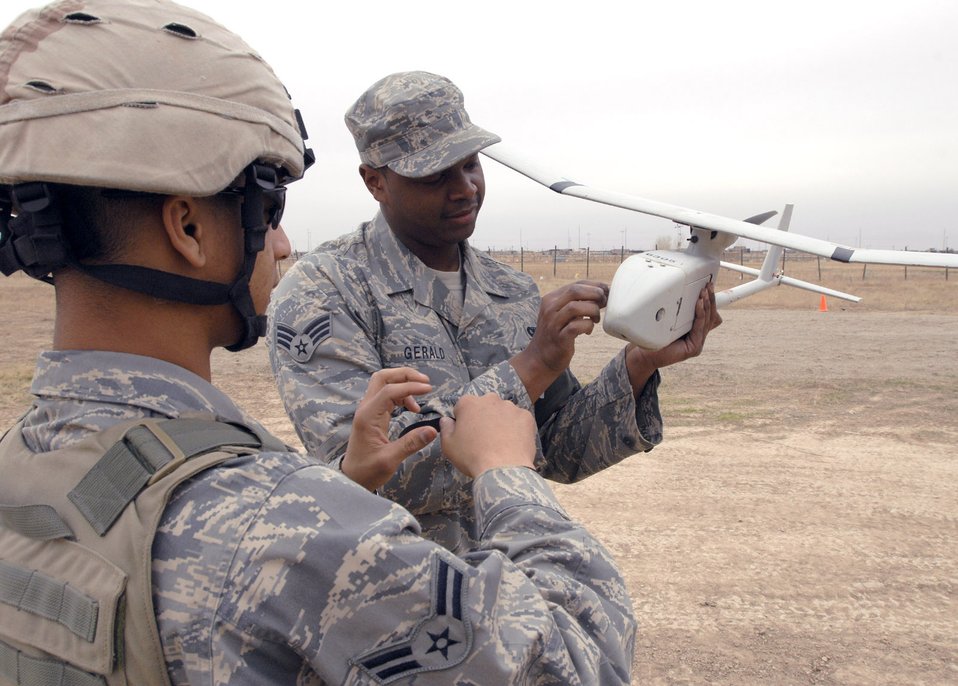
UAVs aid force protection efforts

Airman 1st Class Melvin Silva (left) and Senior Airman Glenn Gerald perform a pre-flight inspection on an RQ-11 Raven before a January mission at Kirkuk Air Base, Iraq. Despite weighing in at less than 5 pounds, this unmanned aerial vehicle plays a vital role in securing the base and surrounding neighborhoods. Airmen Silva and Gerald are 506th Expeditionary Security Forces Squadron Raven operators.